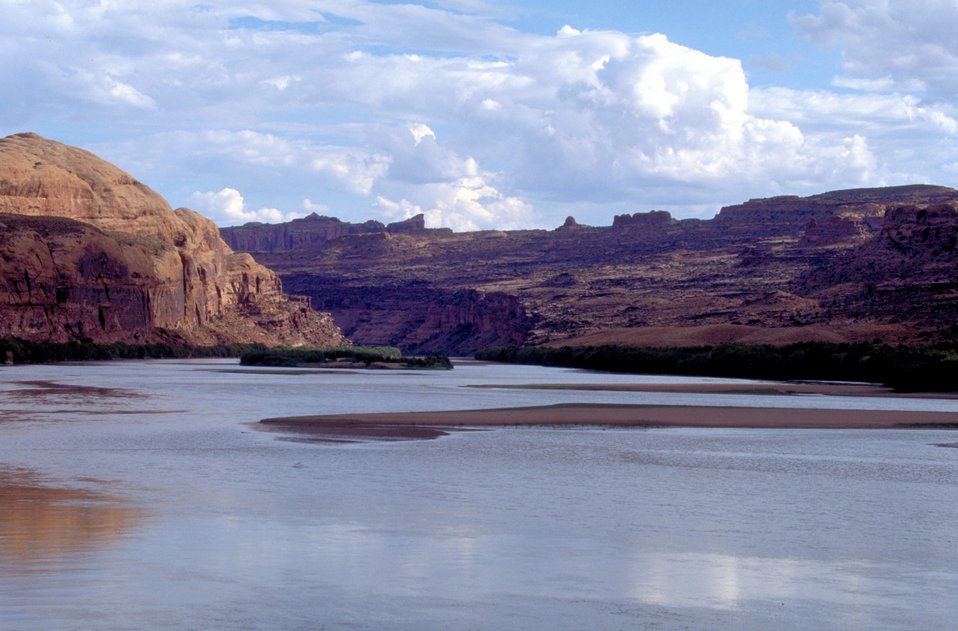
Colorado River near Moab, Utah.